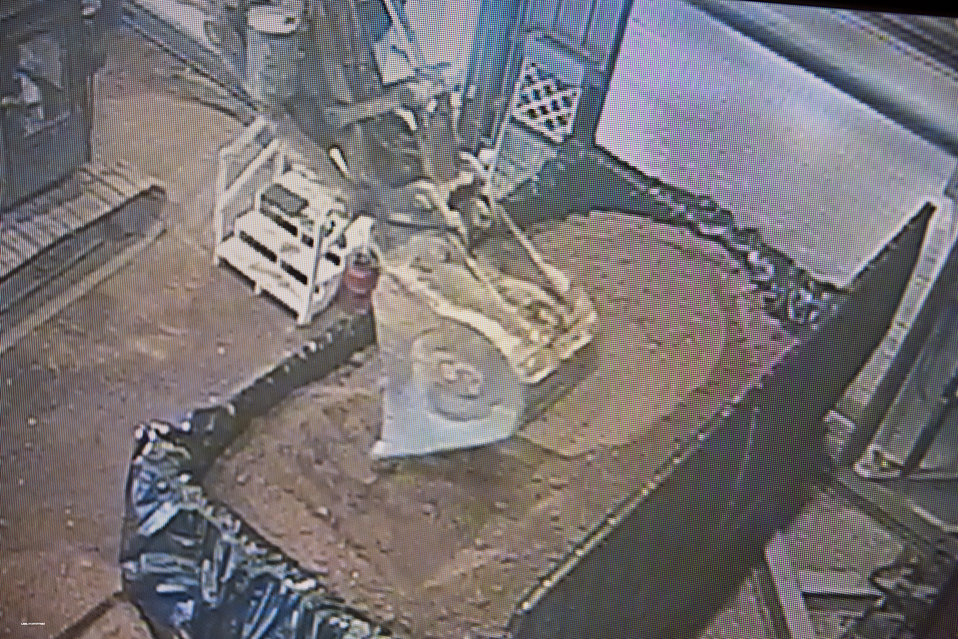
Los Alamos Lab Completes Excavation of Waste Disposal Site Used in the 1940s

A closed circuit camera captured the final scoop of
waste excavated from MDA-B.

Los Alamos National Laboratory completed excavation of its oldest waste disposal site, Material Disposal Area B (MDA-B), in September 2011 thanks to American Recovery and Reinvestment Act funding.